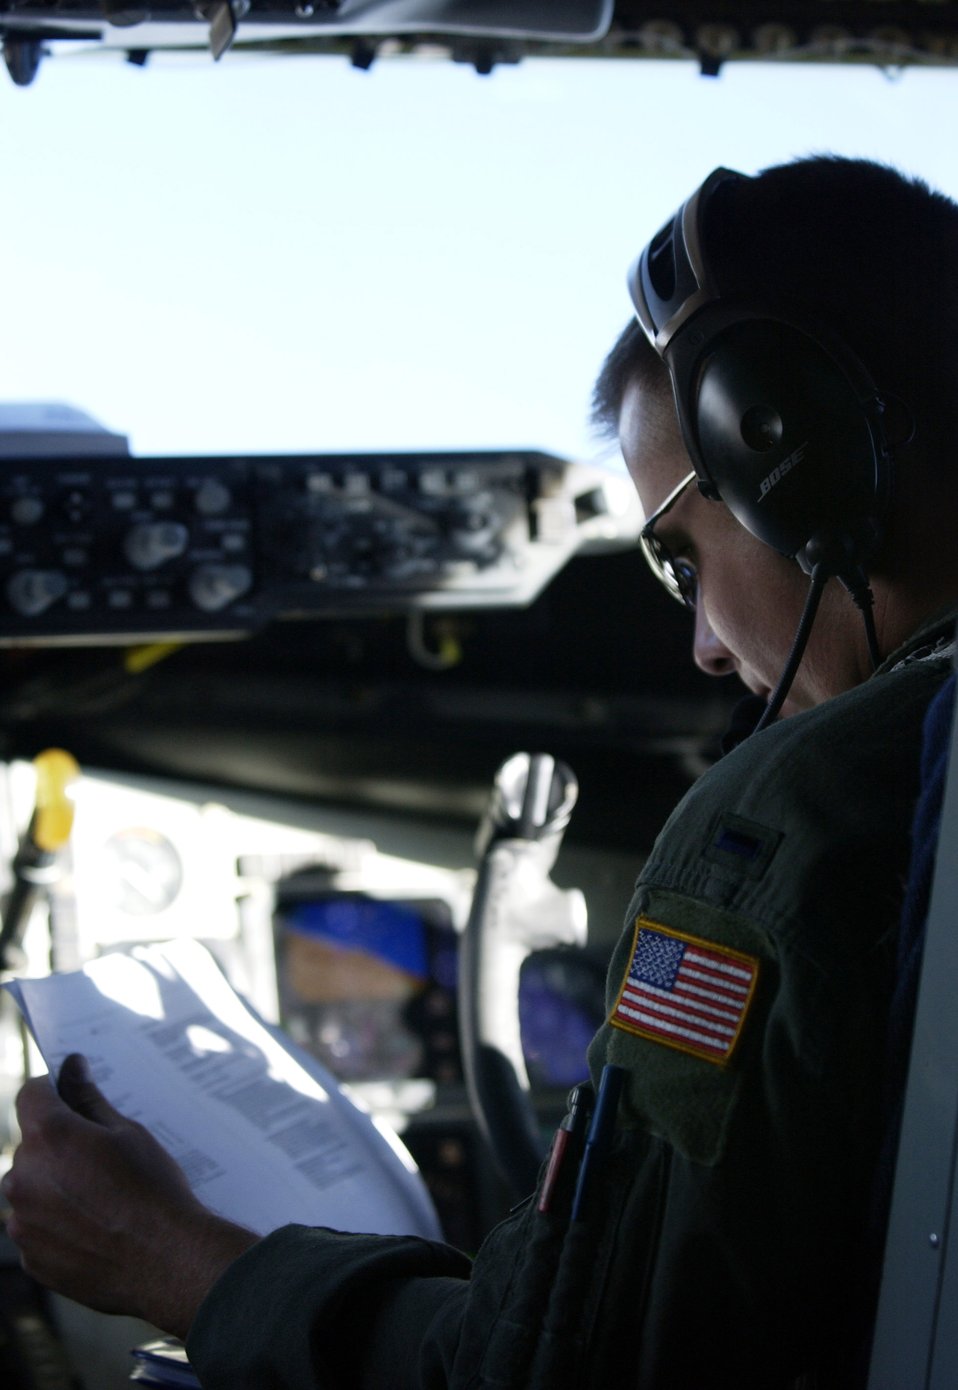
Airmen hone skills at Red Flag

First Lt. Ian Slazinik reviews inflight data Oct. 19 during Red Flag 07-1 at Nellis Air Force Base, Nev. The lieutenant is a KC-135 Stratotanker pilot.